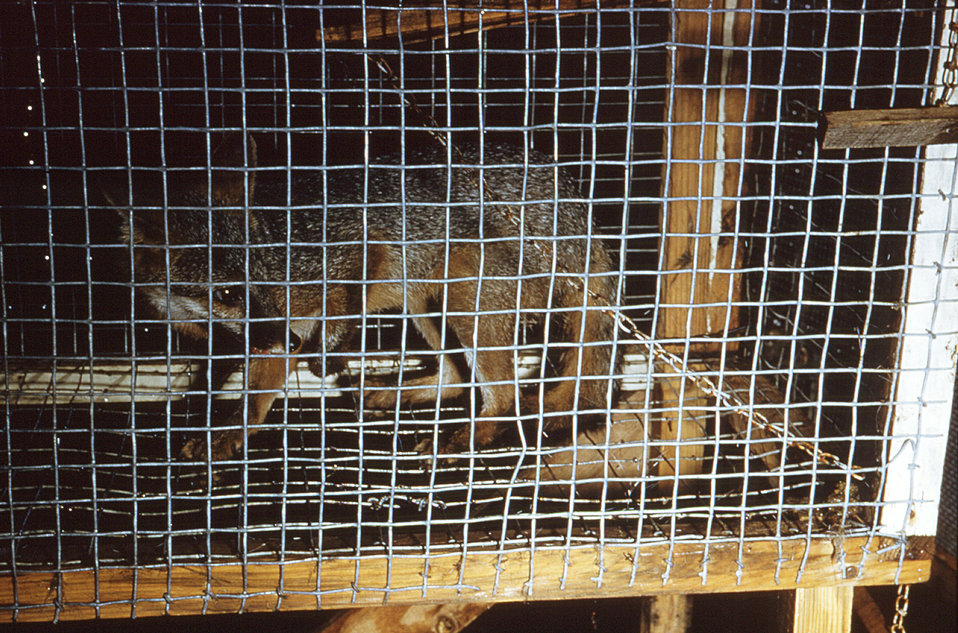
This wild fox exhibited symptoms including agitation, and excessive salivation, and was diagnosed as suffering from rabies.